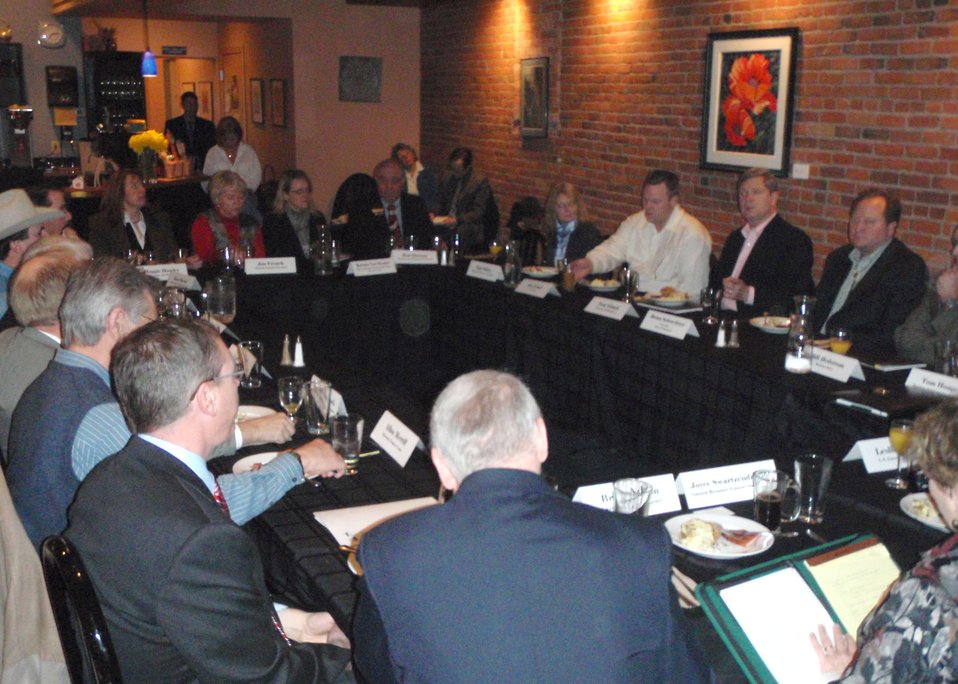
Agriculture Secretary Tom Vilsack visited Montana to discuss his vision for healthy forests and the bark beetle problem infested areas in southwestern Montana. Agriculture Secretary Vilsack (with jacket on under Hibiscus photo) having breakfast in Helena, MT with (left of Secretary cream colored shirt) U. S. Senator Jon Tester (D-MT), ( right of Secretary) Montana Governor Brian Schweitzer, (Right of Governor) U.S. Forest Service Regional Forester Leslie Weldon, and members of the Montana Agricultural community met in west-central Montana on March 6, 2010. USDA photo 10di1257-08